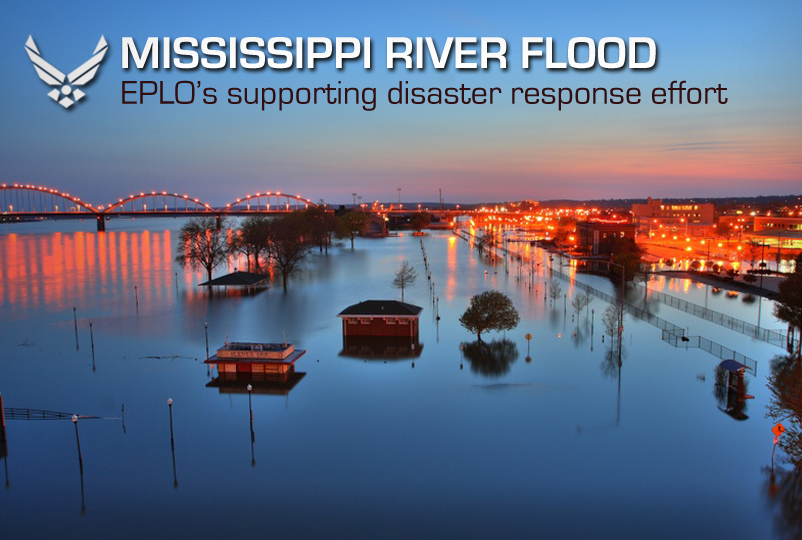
Mississippi River Flood